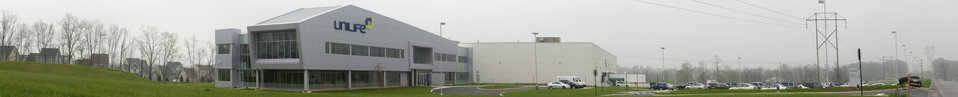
(Virtual panorama, best viewed with largest download) Unilife is a medical device company focused on the design, development, manufacture and supply of a proprietary range of retractable syringes on Monday, April 20, 2011 in York, PA. In partnership with Sanofi-aventis, Mikron Group, and MDMA, U.S. Department of Agriculture Rural Development was able to guarantee $18,000,000 through its Business and Industry Guaranteed Loan Program to construct a custom-built, global headquarters and commercial production facility in York, Pennsylvania. The 165,000 sq. ft. facility was completed in late 2010 and can accommodate future growth as well as the Company’s projected demand from pharmaceutical and healthcare companies for its proprietary range of Unifill ready-to-fill (prefilled) and Unitract general purpose safety syringes. Stage one of the facility is designed to accommodate the production of up to 400 million Unilife syringes per year and to meet stringent pharmaceutical standards for primary drug containers. Adjacent to the manufacturing facility is Unilife’s global headquarters (grey exterior) that support administrative, marketing, new product development, quality laboratories and other operational functions. Unilife, which first arrived in Pennsylvania in 2006. The company has doubled its employees for the past three years. There are approximately 150 employees, and they expect to double the number by 2015.